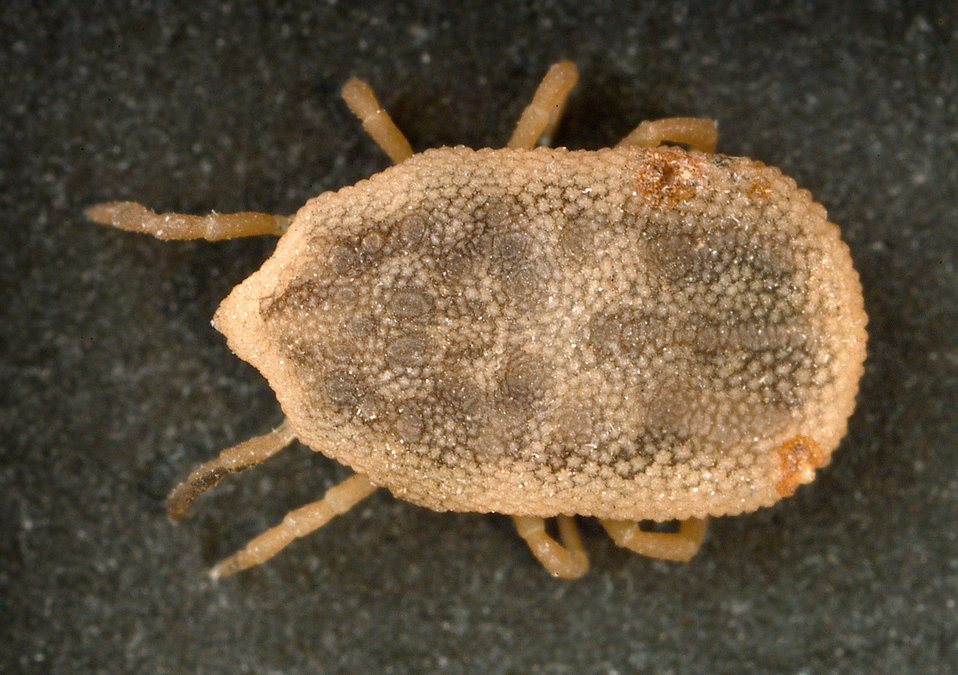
This is a dorsal view of the 'soft tick' Carios kelleyi, formerly Ornithodoros kelleyi, or the 'Bat Tick'.